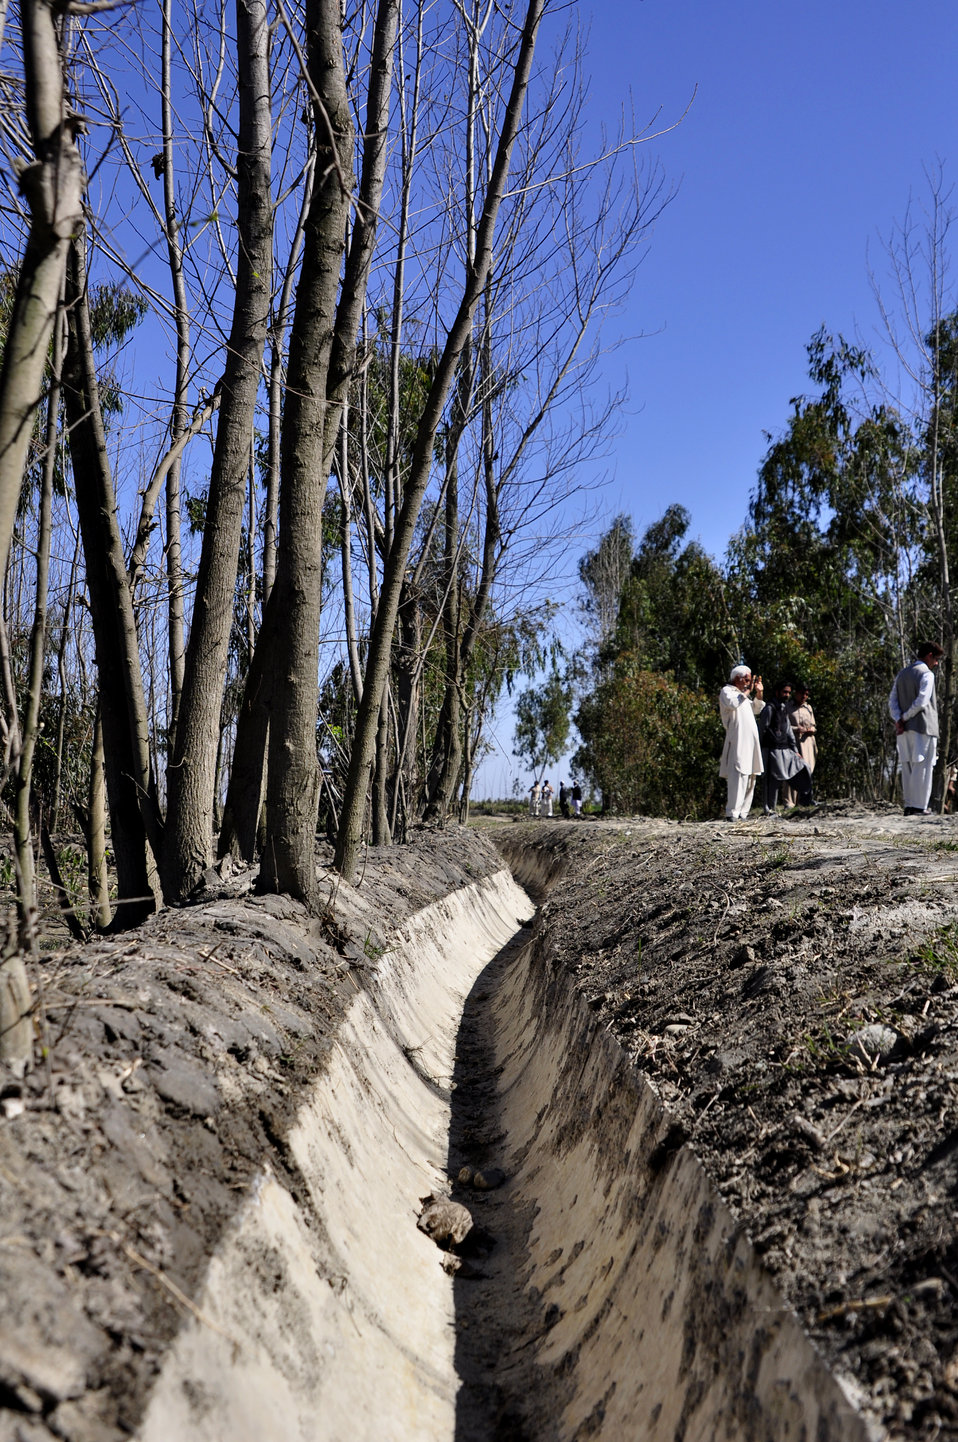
2011 March: USAID's Agricultural Recovery Program in 22 districts of Khyber Pakhtunkhwa, Punjab and Balochistan is an excellent example of the impact US development assistance can have. We have helped more than 500,000 farmers salvage the winter planting season and livestock after the floods. As a result, wheat farmers have nearly doubled their harvests. More than 5 million people have benefited. These photos show progress of the USAID Agricultural Recovery Project in Khyber Pakhtunkhwa.